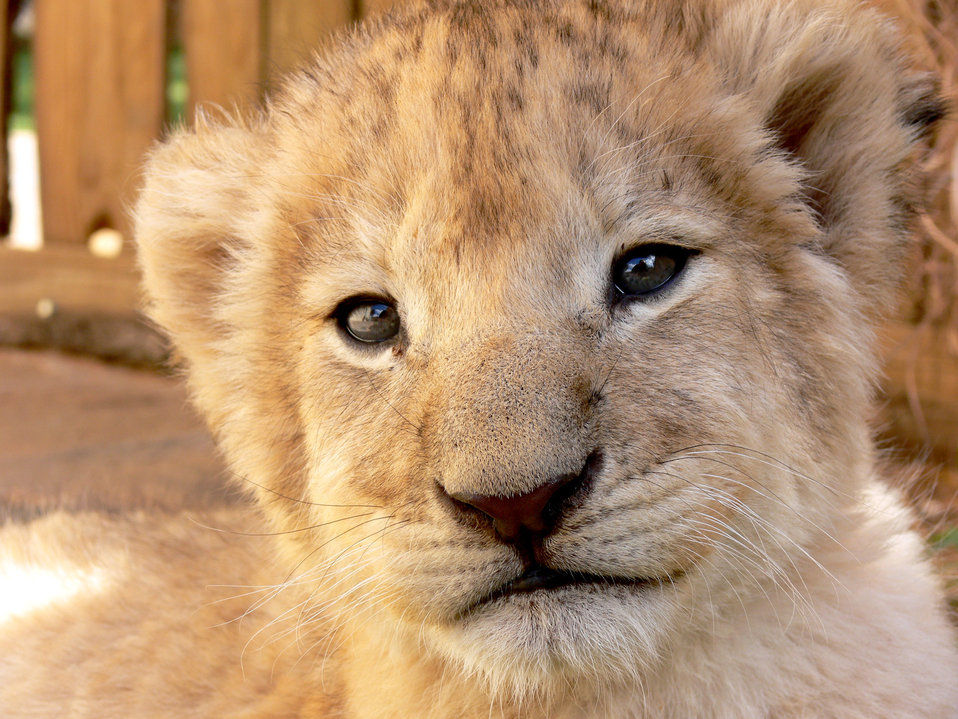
Lion cub gaze

Lion cub gazing at camera.